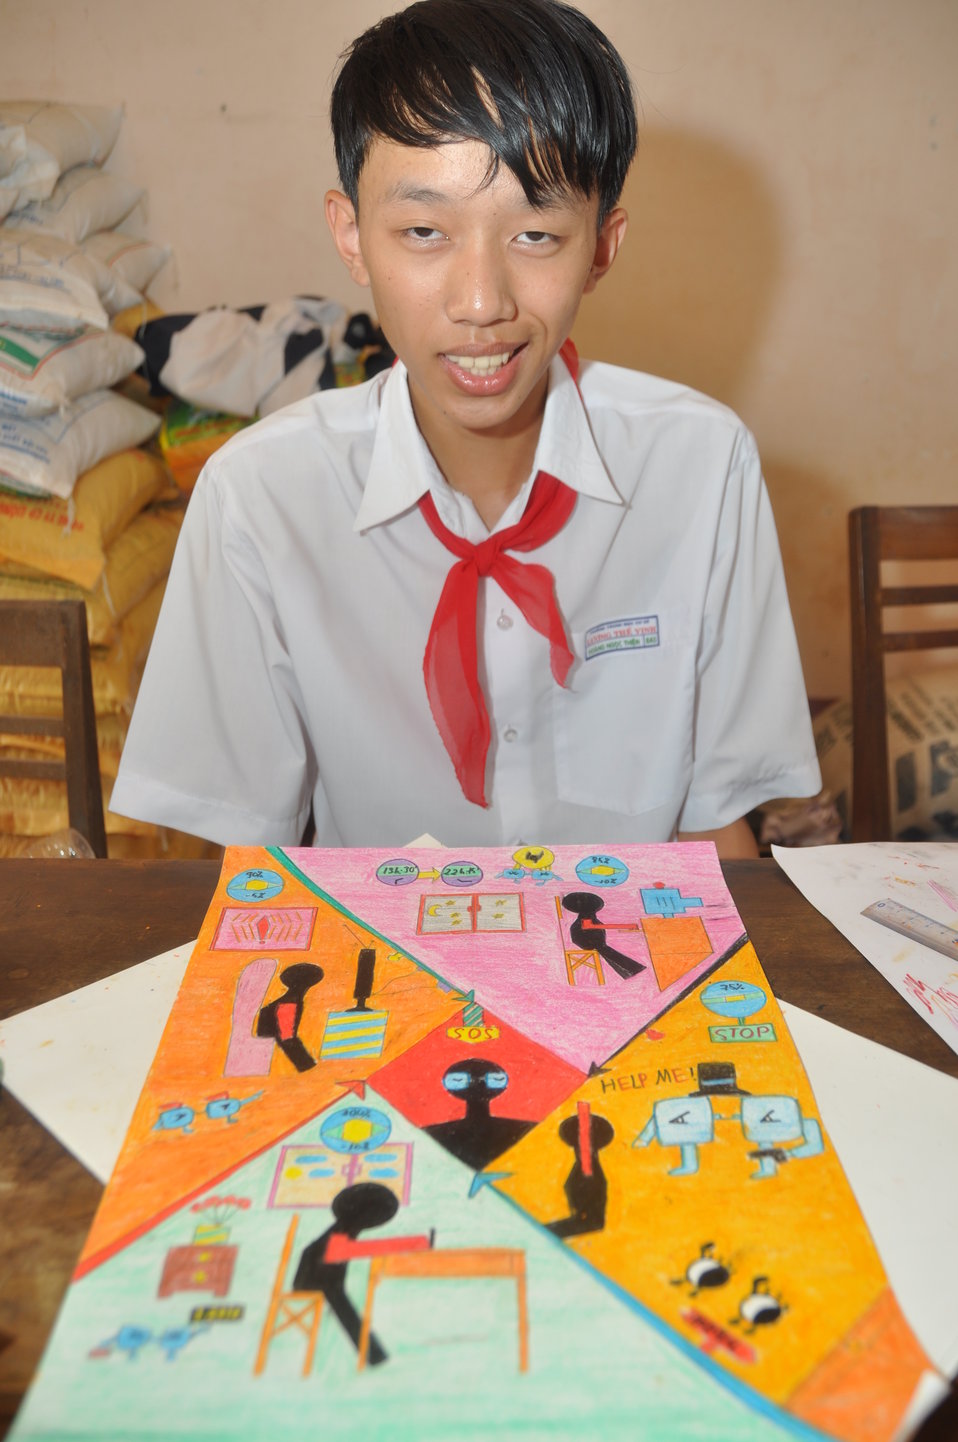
Students in Kon Tum create artwork about the importance of eye care